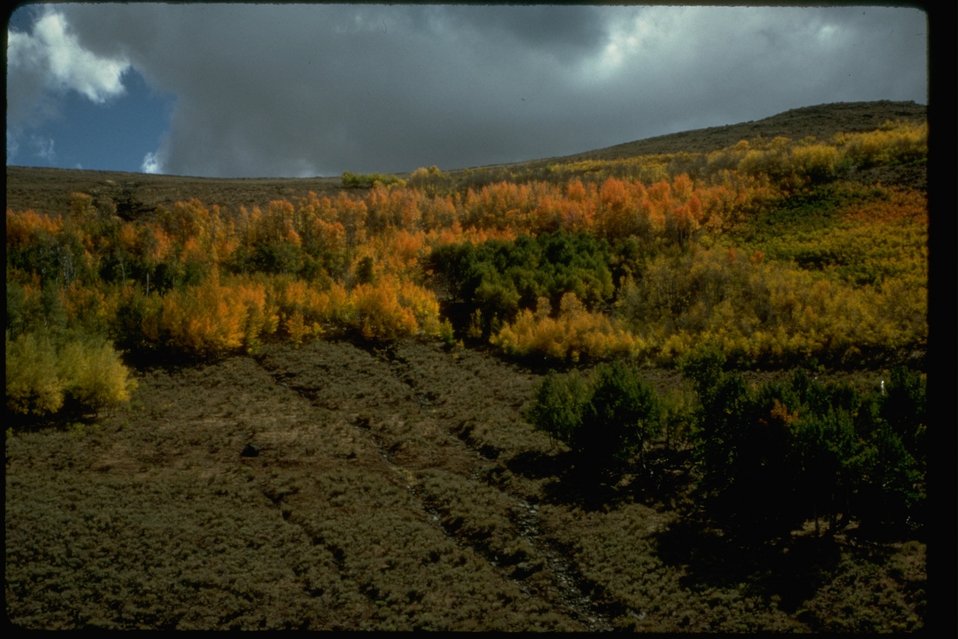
Disaster Peak near the head waters of Big Trout Creek. The Aspen trees' leaves have their fall colors. (Burns District, but Vale District administrated) OR 3-153